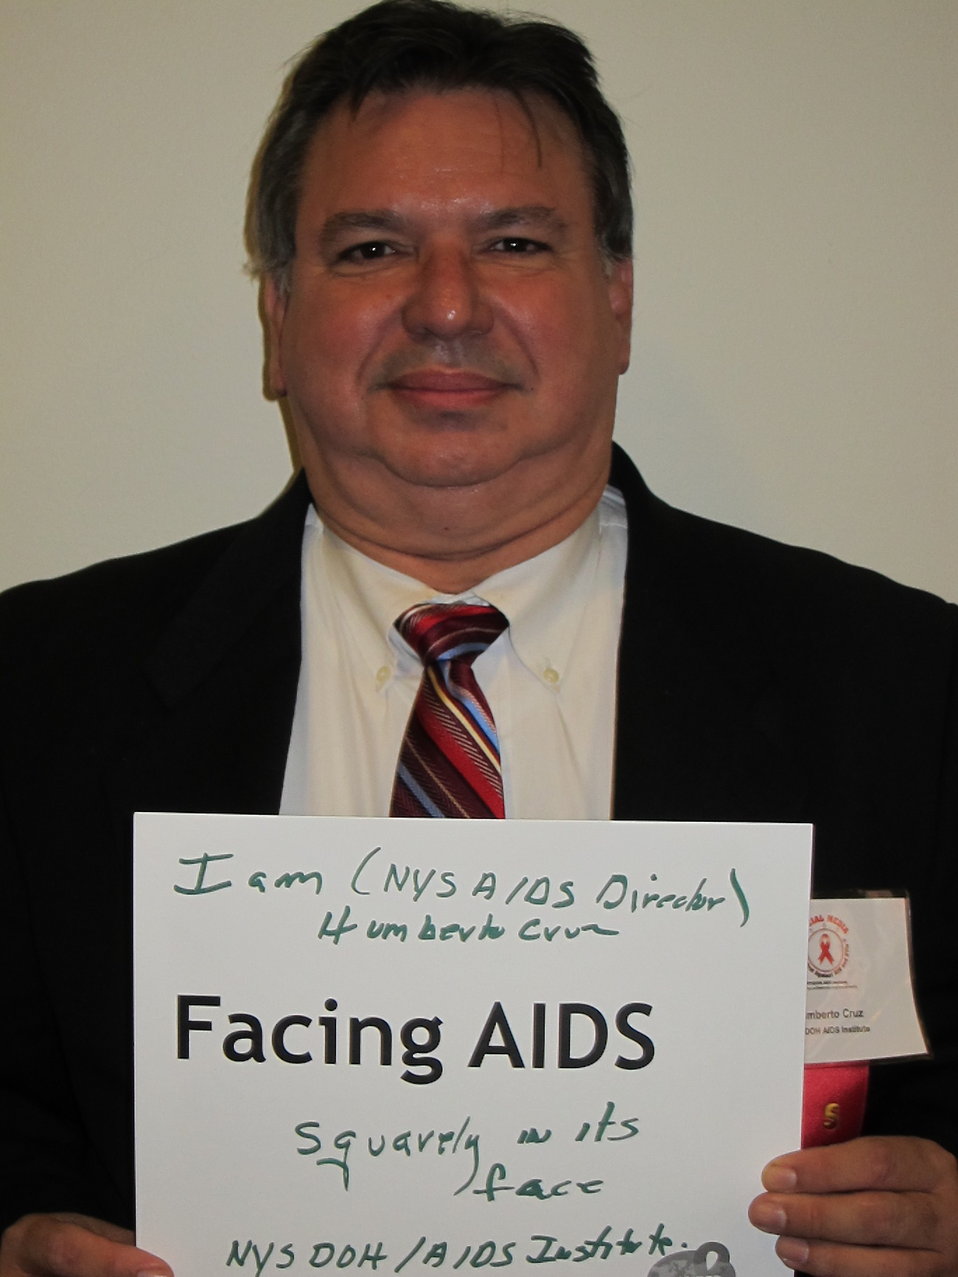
I am NYS AIDS Director, Humberto Cruz Facing AIDS squarely in its face. NYSDOH/AIDSinstitute